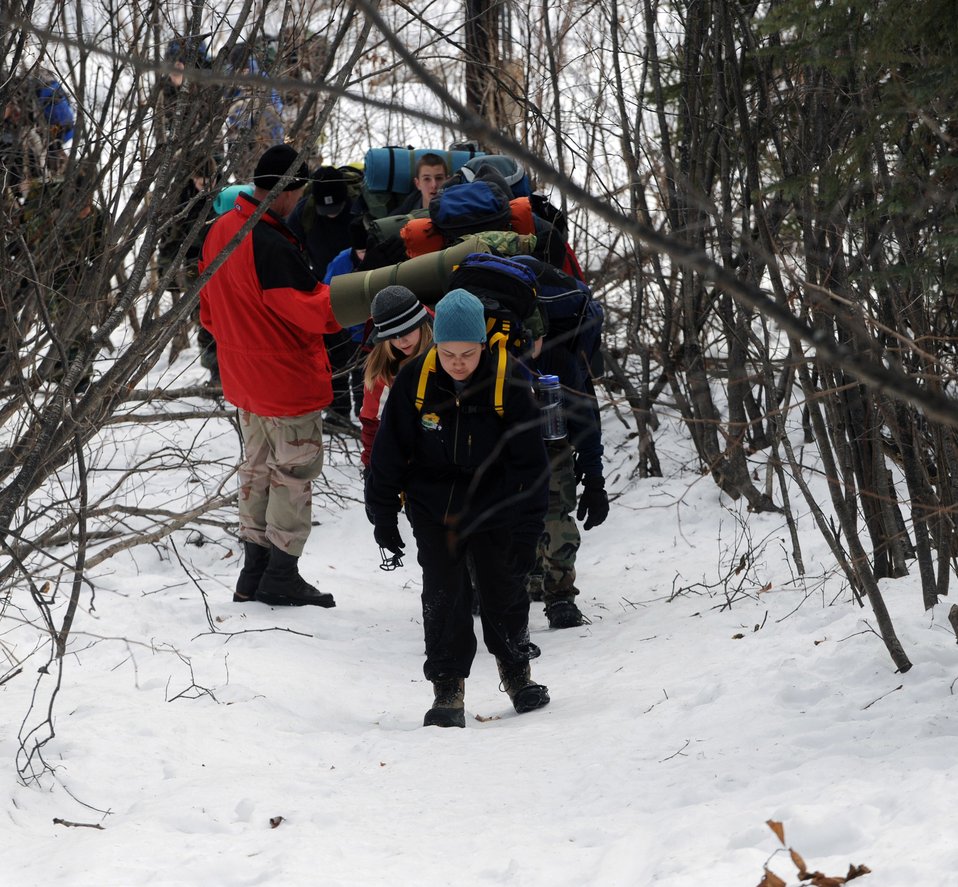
Cadets recieve cold-weather training in Alaska

Cadets of the Eagle River and West High School Junior ROTC march the eight-mile trail Feb. 29 from the Fort Richardson Military Youth Academy to Upper Otter Lake in Alaska. Several cadets carried more than 50 pounds of gear on their back during the hike to the lake. Airmen from Elmendorf Air Force Base, Alaska, taught survivial training skills to the cadets.